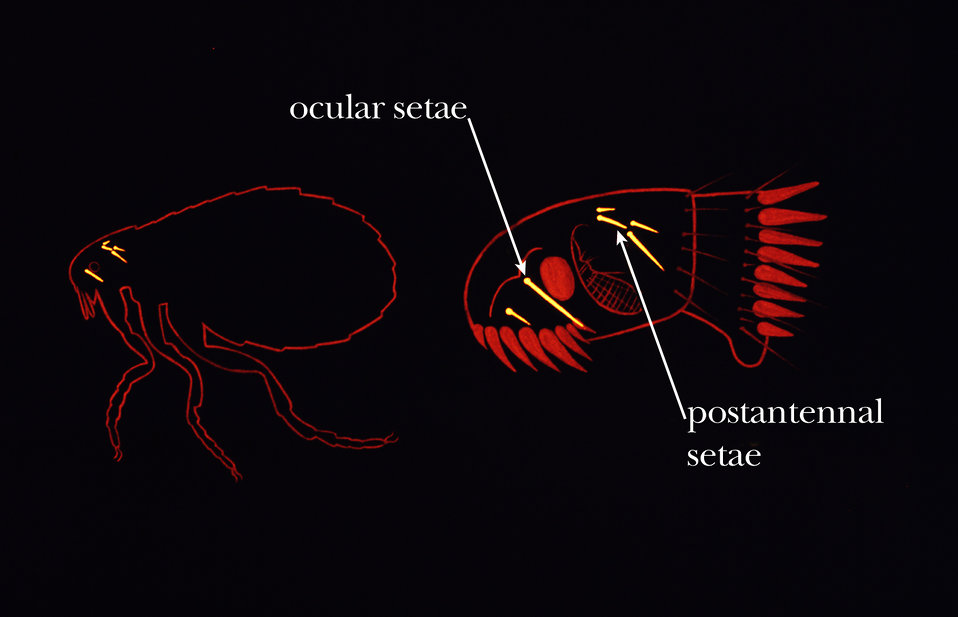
This illustration depicts the setae, or bristles about a flea's head segment; one of the insect's identifying characteristics.